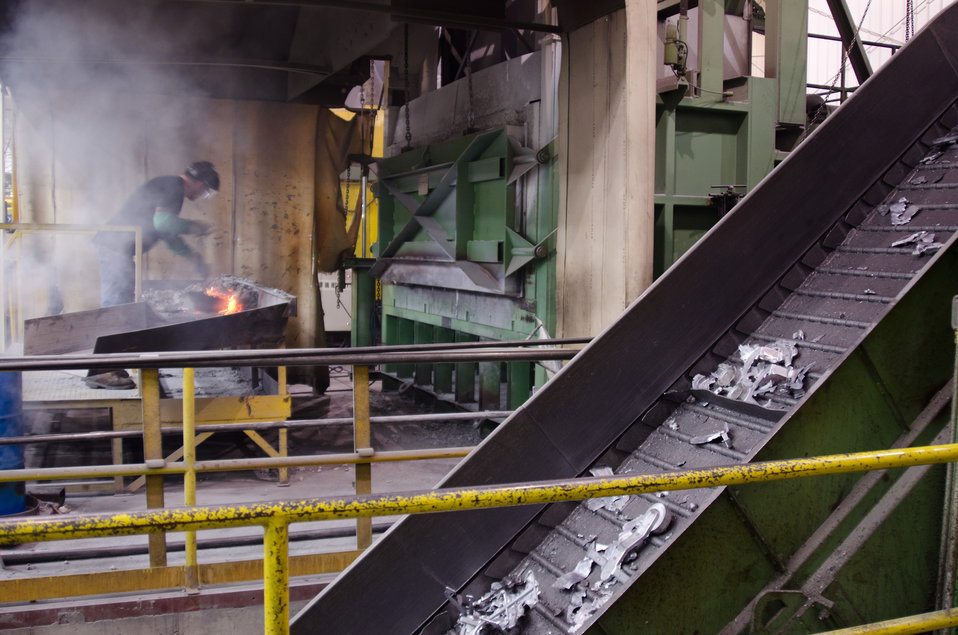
Melter operator Carl Welborn faces flames and intense heat to forklift foundry ingots into; and shovels slag out of a furnace crucible at Port City Group’s Port City Castings Corporation, manufacturer of high-pressure aluminum die-castings, mostly for the automotive industry, in Muskegon, MI, facility on Wednesday July 20, 2011. Port City Group boosted its employment by 12 percent over last year thanks to two Rural Business Guaranteed Loans totaling $9.6 million. In its 80,000 sq. ft. facility, machines that range from 800 – 1,600 tons, and cast A380 aluminum alloy products from melted ingots of aluminum, into automotive components of U.S.A. made vehicles. The process features a variety of robotic presses; computer controlled machining; quality control facility; and complete measurement and testing laboratory. In 2009 banks were backing out of loans for PCG equipment purchase agreements. The U.S. Department of Agriculture (USDA) loan guarantee helped make the loan possible with its guarantee. PCG obtained the needed robotic and other equipment. This resulted in a stable workforce that has since grown. When asked about their USDA experience, Port City Group Sales Manager Laura LaGuire said, “It was great! They were very helpful. Everything that came up was handled smoothly, the money came in place when it was needed, and it was a very smooth transition.”